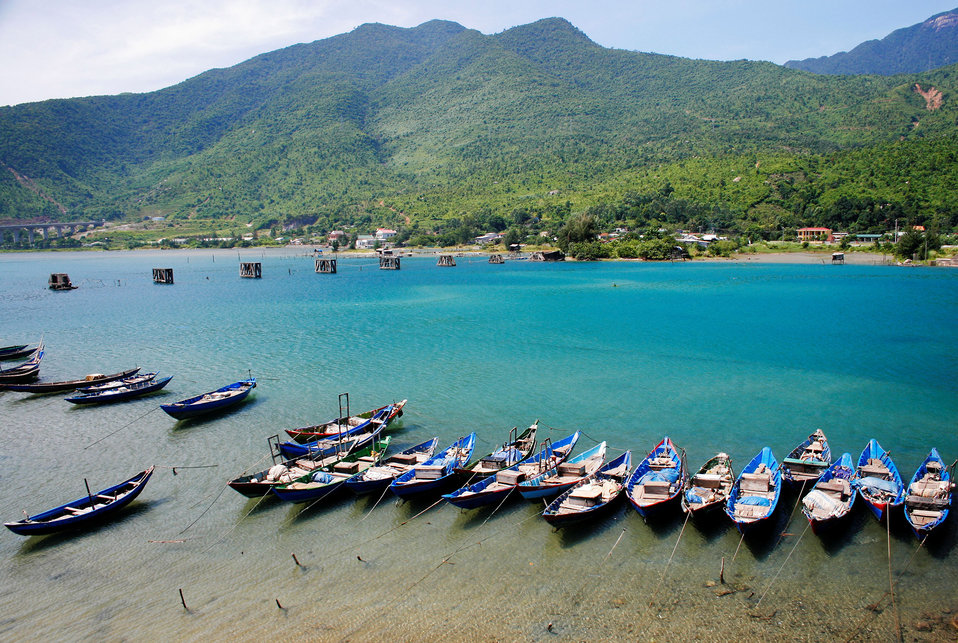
Waiting

Place of fishermen moored boats at lang co, hue, vietnam..